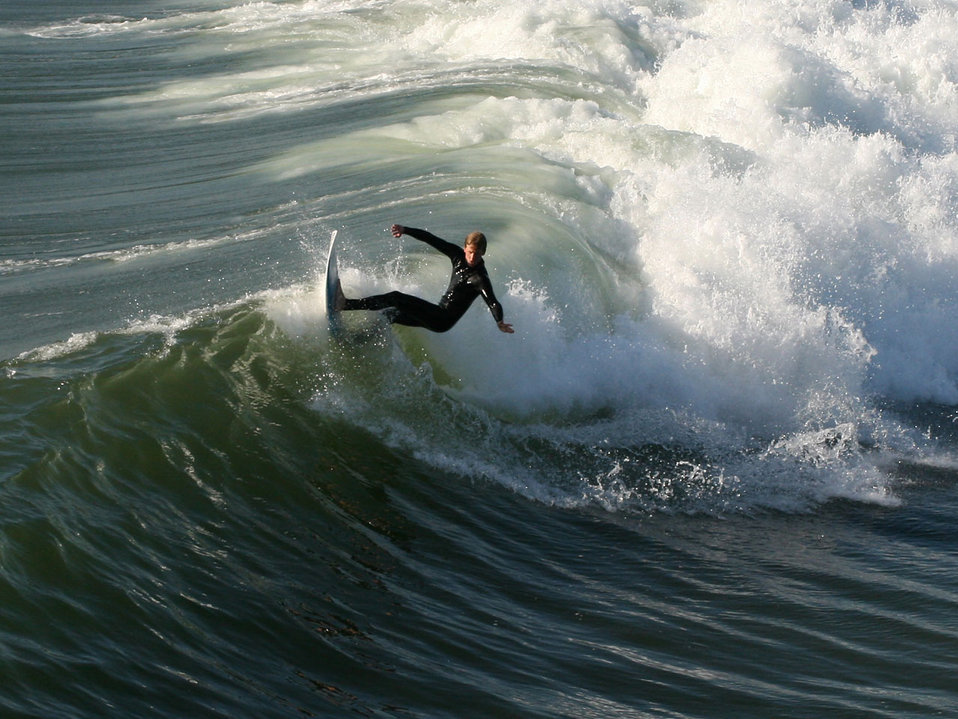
Surfer

Shot on the north side of huntington beach pier, huntington beach, ca, on 4 dec 2007..